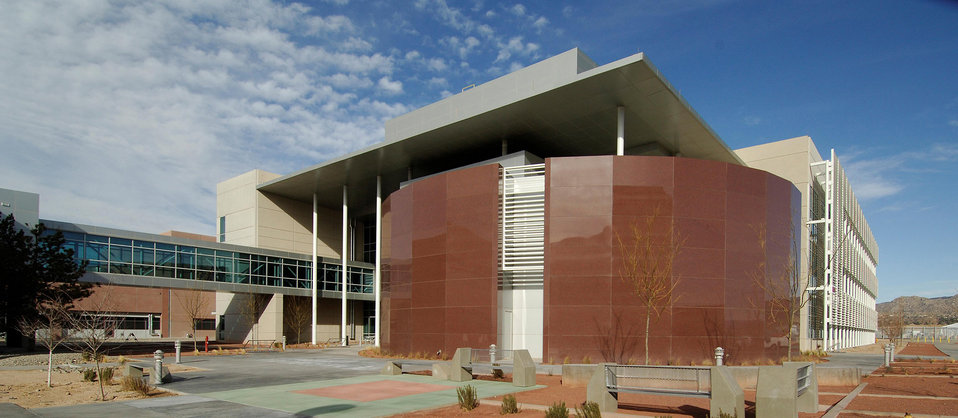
At Sandia, the Microsystems and Engineering Sciences Applications (MESA) Complex's initial mission is to produce electronic circuits and computer chips designed to withstand high levels of radiation.
These hardened electronics are critical to national security needs. Beyond its security role, MESA's combination of high-performance computing simulations, scientific research, and production capabilities in electronics and optics at the micro and nano levels makes it a world leader in a new type of simulation-led engineering that improves the quality of consumer goods.